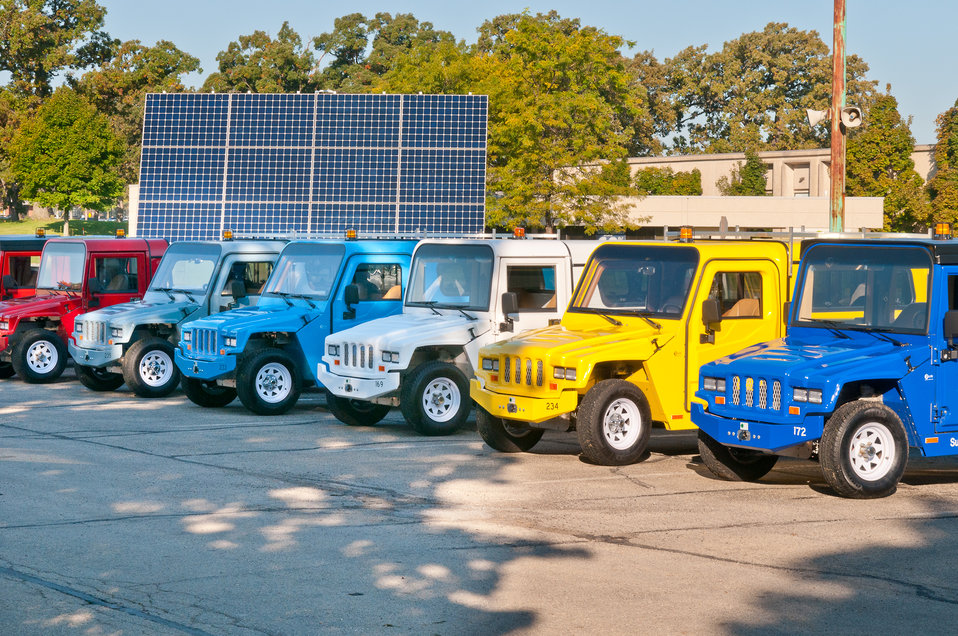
Shown is Argonne National Laboratory's green fleet and solar power electric vehicle charging station.